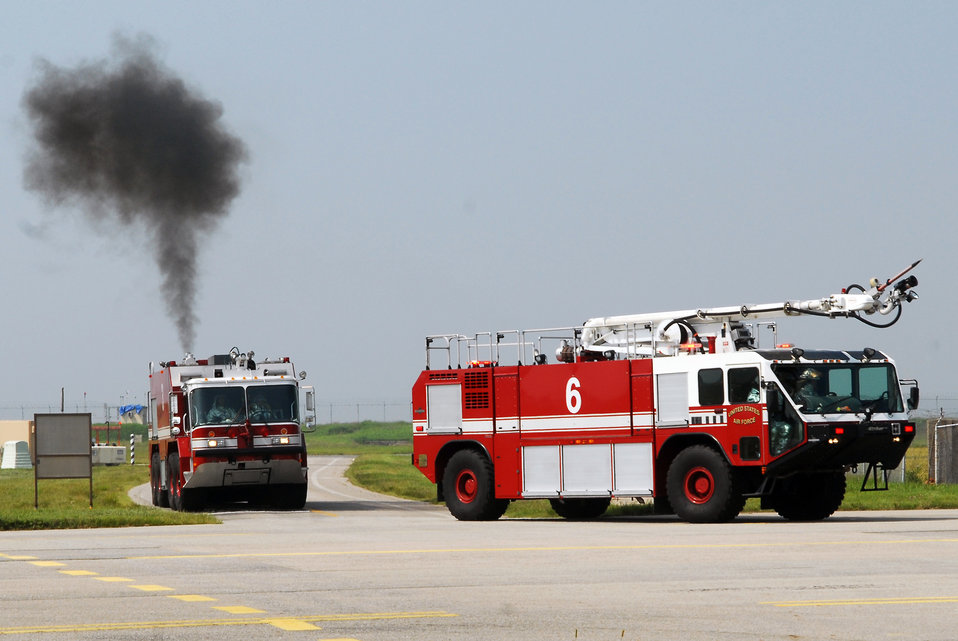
First responders

Members of the 8th Civil Engineer Squadron and South Korean fire departments respond to a simulated hostage exercise at the Gunsan airport Sept. 17, 2010, at Kunsan Air Base, South Korea. The exercise is conducted annually to enhance counterterrorism and prepare emergency responders for real-life situations.